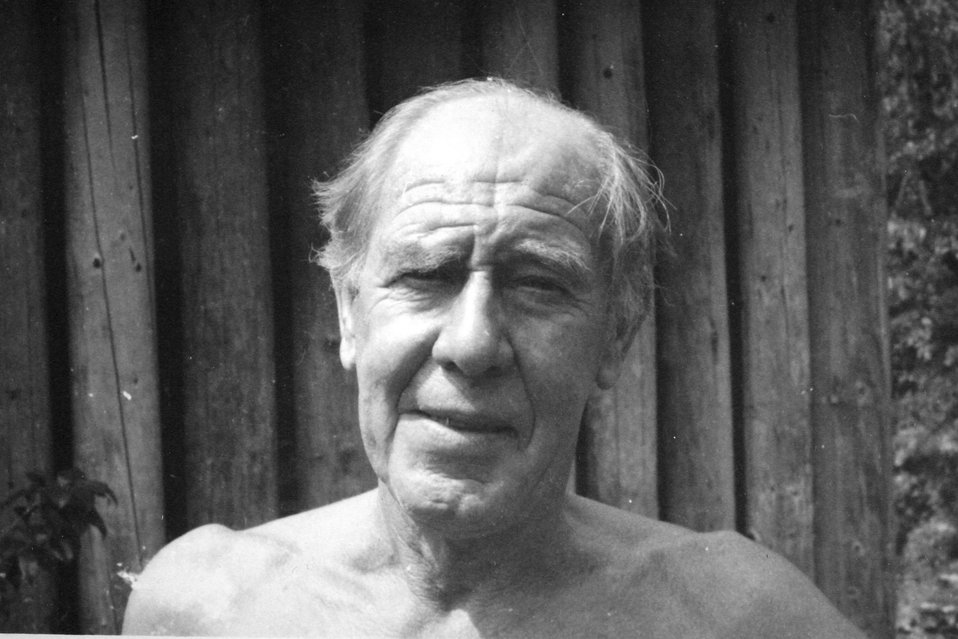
Red Keller